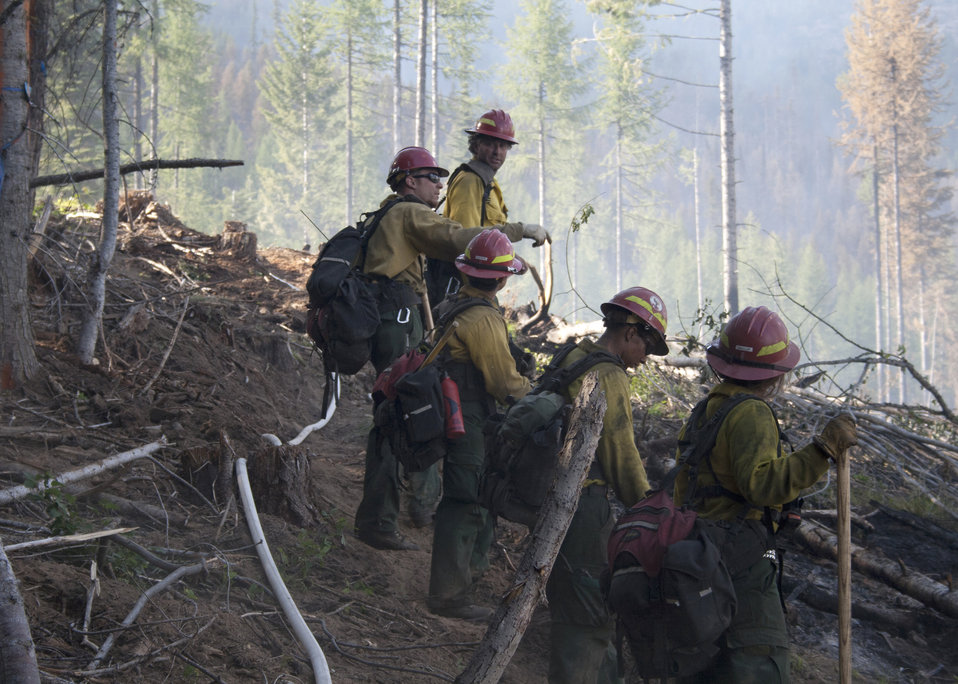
Firefighters supported by three fire engines, two helicopters, two water tenders, a dozer and an air tanker battled to contain the 90 acre Rogers Fire located on Mt. Rogers five miles west of Aladdin, WA on the Colville National Forest. Firefighters worked under adverse conditions with steep terrain and gusting winds to reduce the loss of timber and protect the Rogers Mountain Trail. The Rogers Fire began on Aug. 9, 2011 and was controlled by Aug. 19, 2011 with mop up crews ensuring that no flare-ups occurred. Colville National Forest has 1.1 million acres in northeastern Washington and includes the Kettle River, Selkirk Mountain ranges, and the upper reaches of the Columbia River.